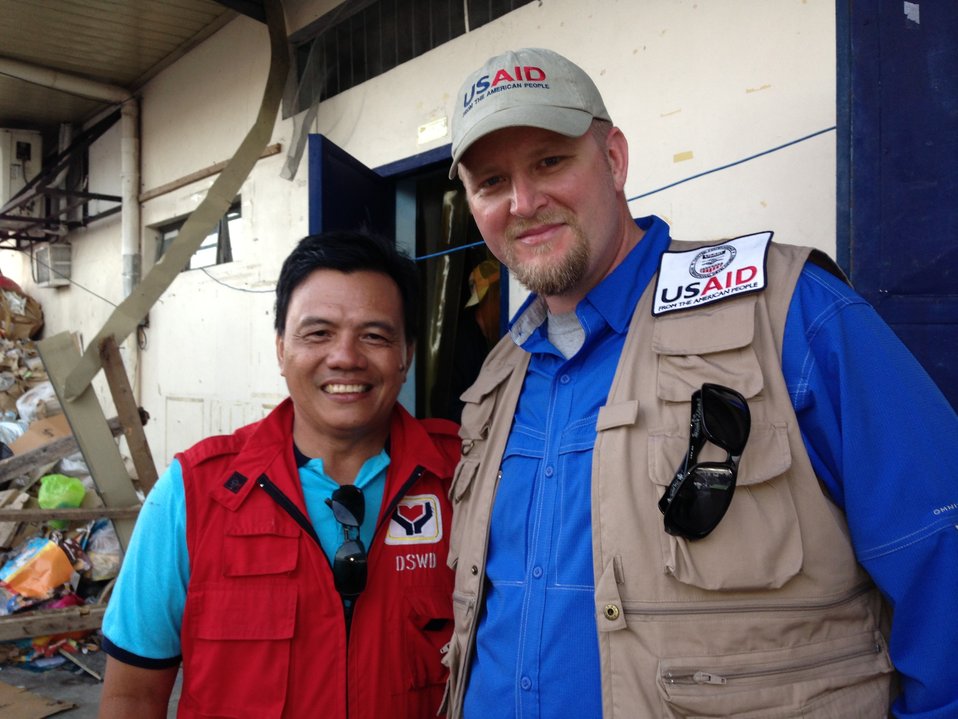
Philippines Assistant Secretary for Social Welfare and Development with DART Team Leader

Camilo Gudmalin, Assistant Secretary for the Philippine Dept of Social Welfare and Development (left), and USAID DART Team Deputy Leader Ben Hemingway (right), who have weathered many disasters, pose for a photo on November 16, 2013. Since 1990, USAID has responded to more than 40 disasters in the Philippines, including volcanic eruptions, typhoons, and earthquakes.